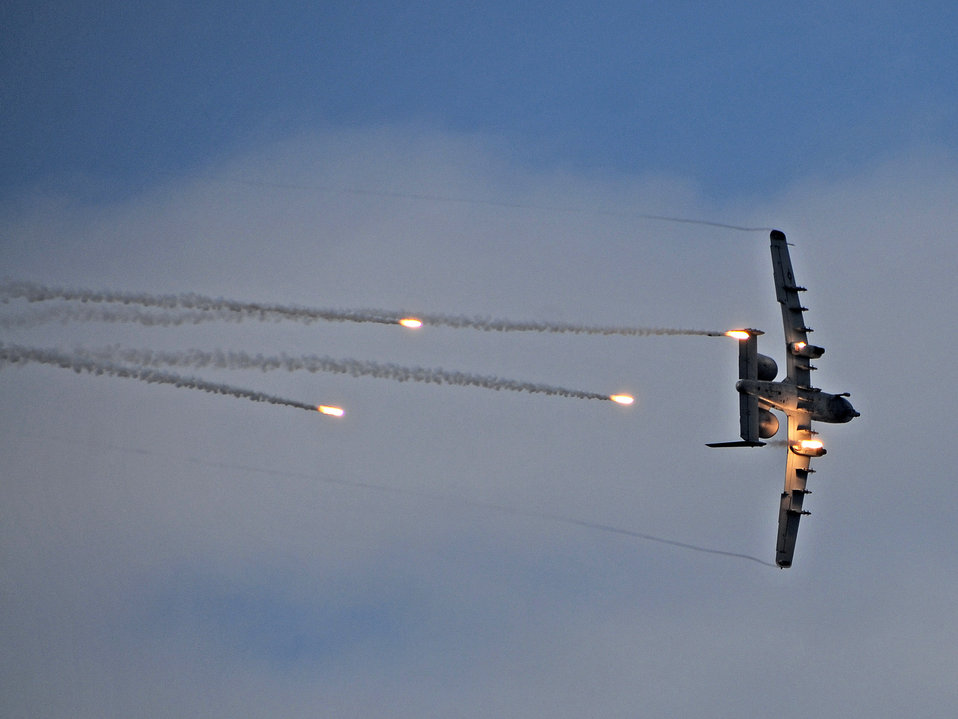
Dec. 25 airpower summary: A-10s support war effort

An A-10 Thunderbolt II fires flares. A-10s conducted shows of force with flares to deter enemy activities in Afghanistan.